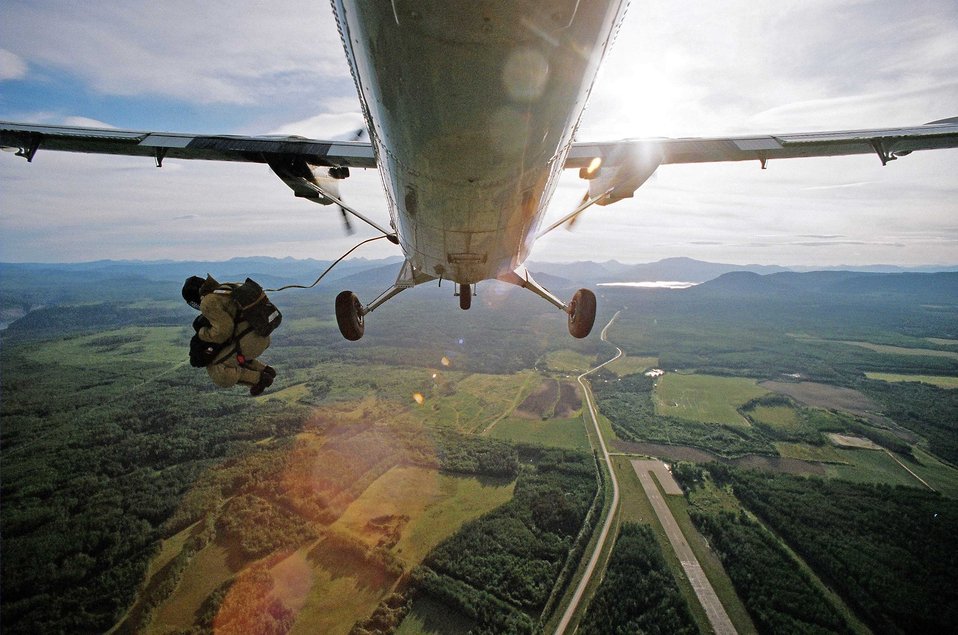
Smokejumper US Forest Service photo

A smokejumper exits a plane.